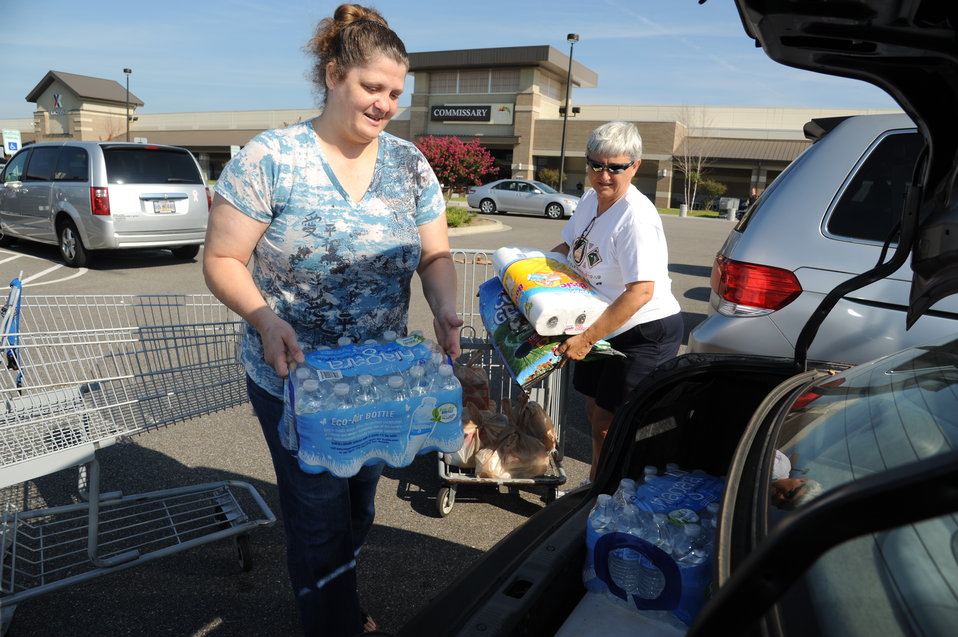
Keesler takes preventative measures to prepare for Isaac

8/28/2012 - Darlene Gnuschke, Air Force retired and Biloxi resident, receives help from Maria Ainaga, head bagger at the base commissary with loading cases of water and other hurricane supplies into her trunk Aug. 27, 2012, at Keesler Air Force Base, Miss. Keesler personnel are taking preventative measures to prepare and protect themselves and Keesler's assets as the base commander has declared HURCON 3, meaning destructive winds of 58 mph or greater are expected as Hurricane Isaac approaches.